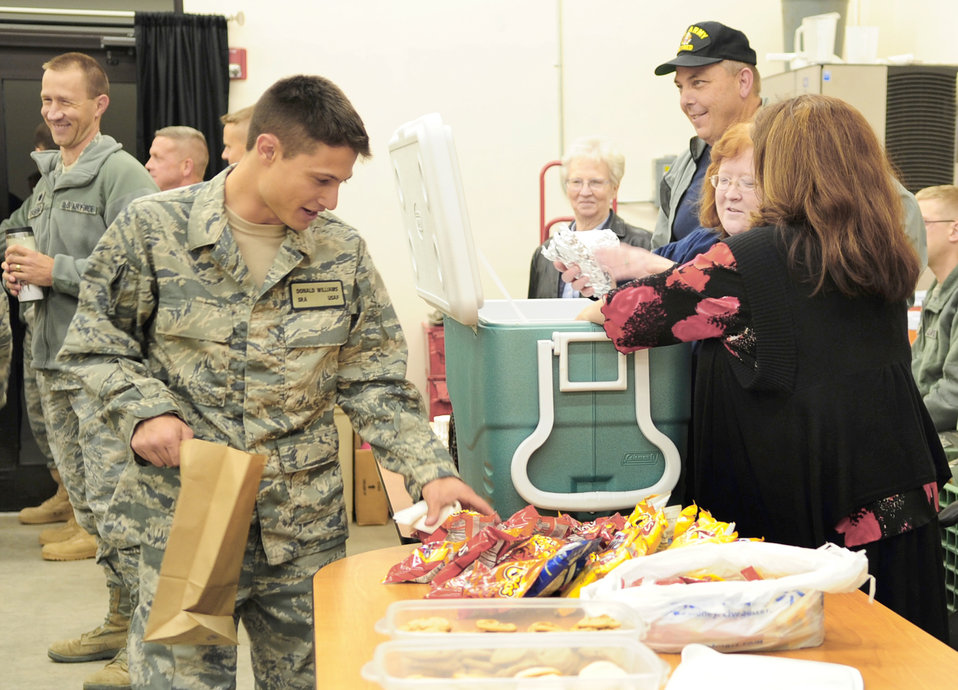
820th BDG

Senior Airman Donald Williams packs a sack meal before loading the bus Dec. 6, 2010, at Moody Air Force Base, Ga. Hot dogs, chips, cookies and drinks were provided by the 23rd Force Support Squadron Airman and Family Readiness Center to support the deployers heading to Afghanistan. Airman Williams is an 822nd Base Defense Squadron patrolman.